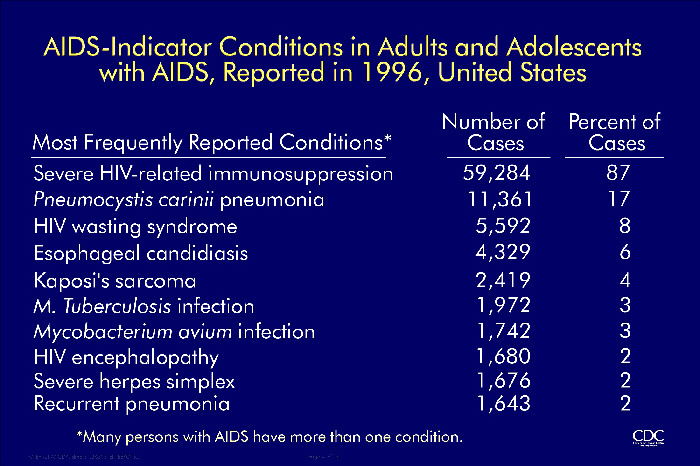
AIDS-Indicator Conditions in Adults and Adlescents with AIDS, Reported in 1996, United States